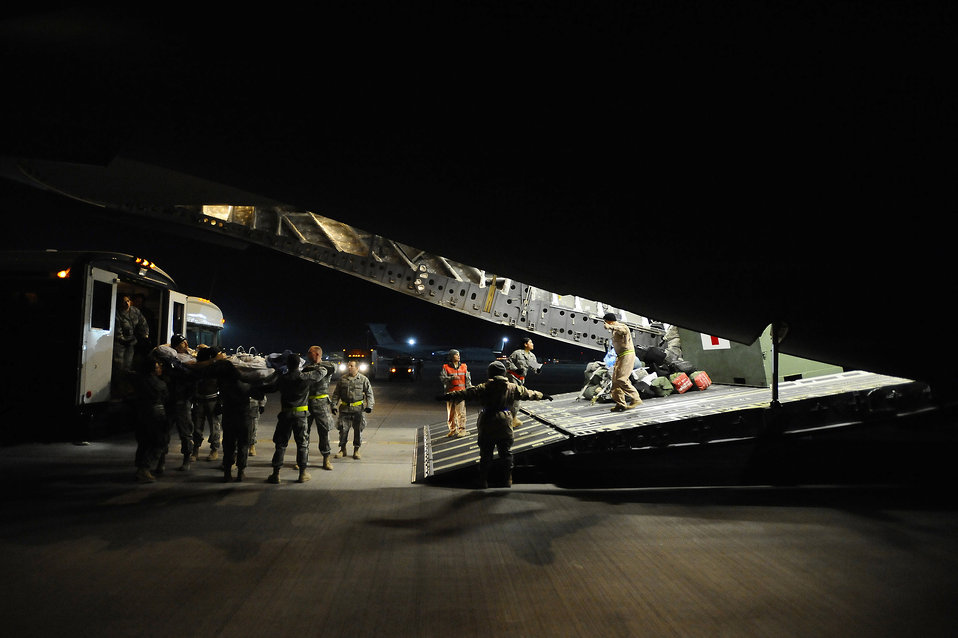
Warrior care

Senior Airman Samantha Brunner helps lower a patient from the ambulance bus to volunteers and medical staff Nov. 27 at Joint Base Balad, Iraq. Litter-bound patients and critical care air transport patients are carefully loaded onto aircraft before being aeromedically evacuated out of Iraq. In 2008, more than 7,500 patients have been transported from the CASF in 650 missions. Airman Brunner, an aerospace medical service journeyman with the 332nd Expeditionary Aerospace Medical Squadron and native of Washington, Pa., is deployed from the 911th Airlift Wing at Pittsburgh International Airport Air Reserve Station, Pa.